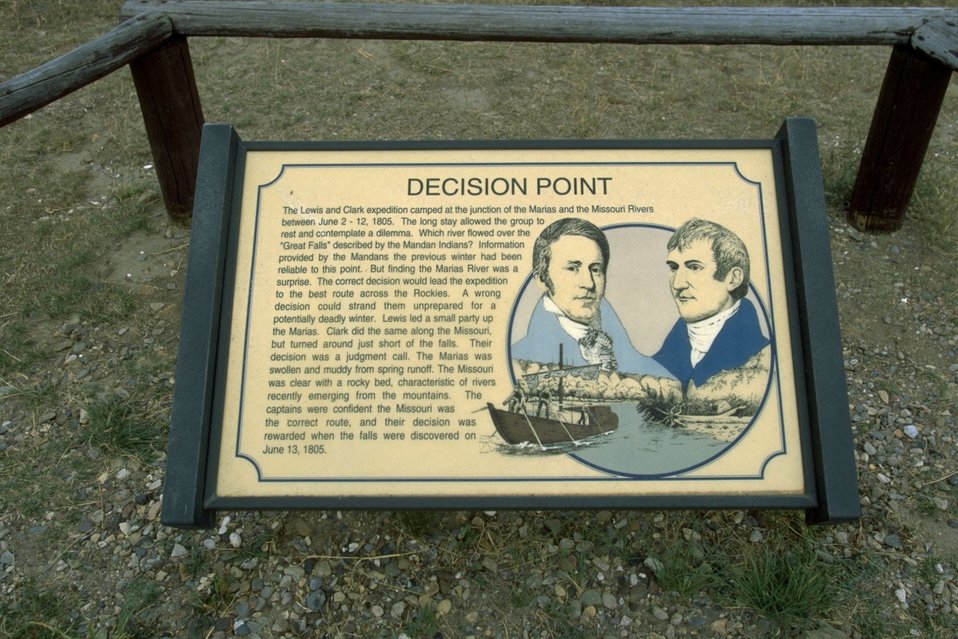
Interpretive signs at Decision Point, the confluence of the Marias and Missouri Rivers